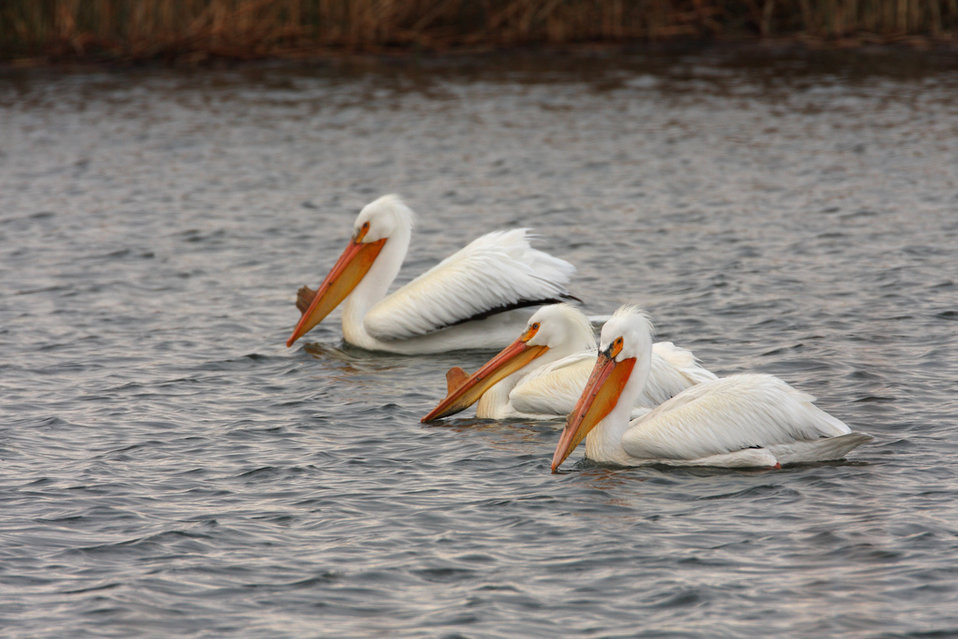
white pelicans

Malheur National Wildlife Refuge, OR